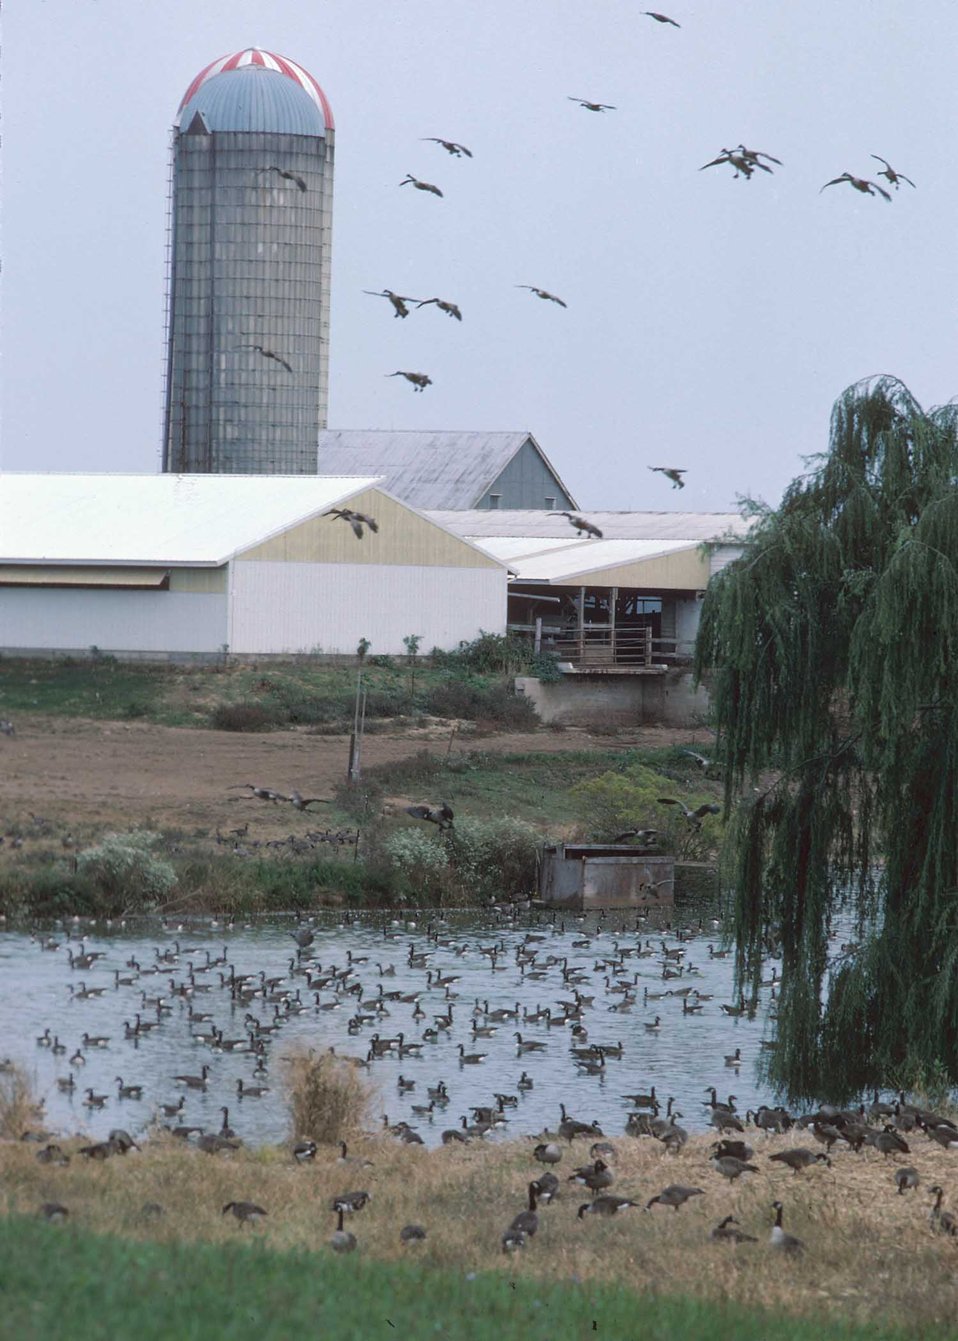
Canadian geese fill a pond on this farm on Maryland's Eastern Shore.